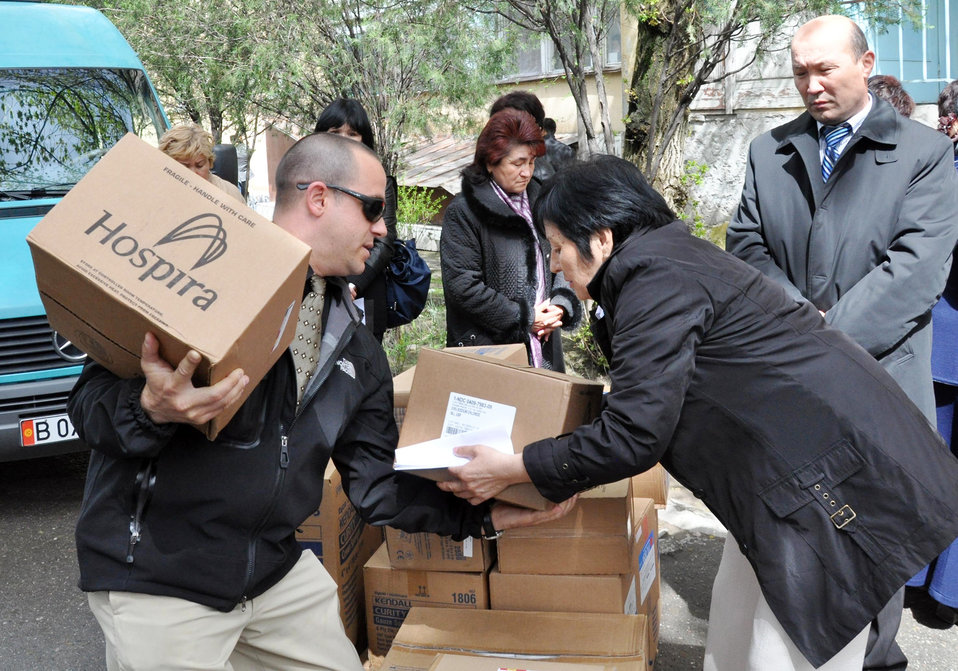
Airmen continue distributing medical supplies to Bishkek

Jeff Villemarette carries medical supplies from the Transit Center at Manas April 15, 2010, to the National Hospital in Bishkek, Kyrgyzstan.